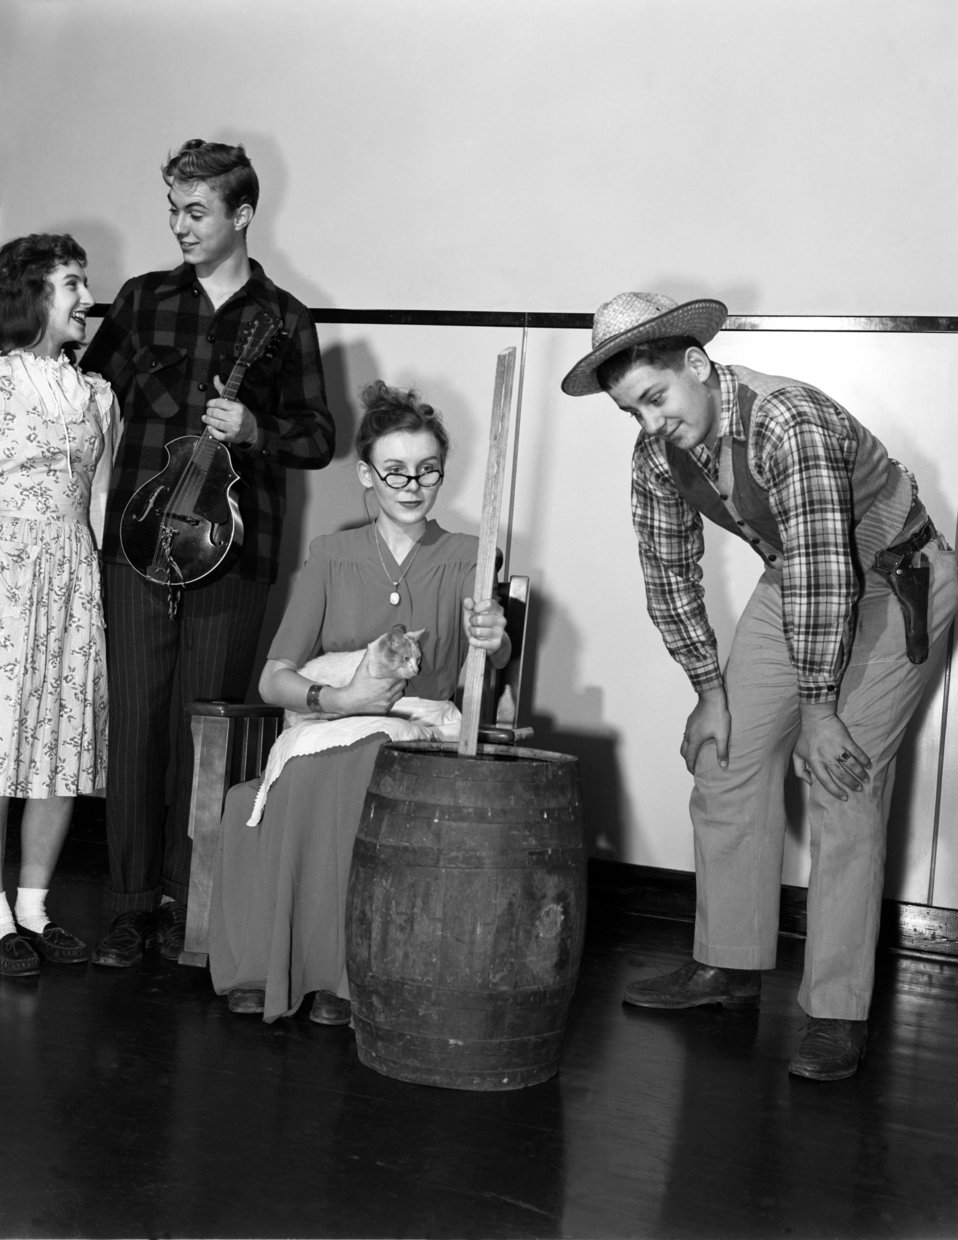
Play at Oak Ridge High School 1947

3290-4b DOE photo Ed Westcott 2-12-1947 Oak Ridge Tennessee